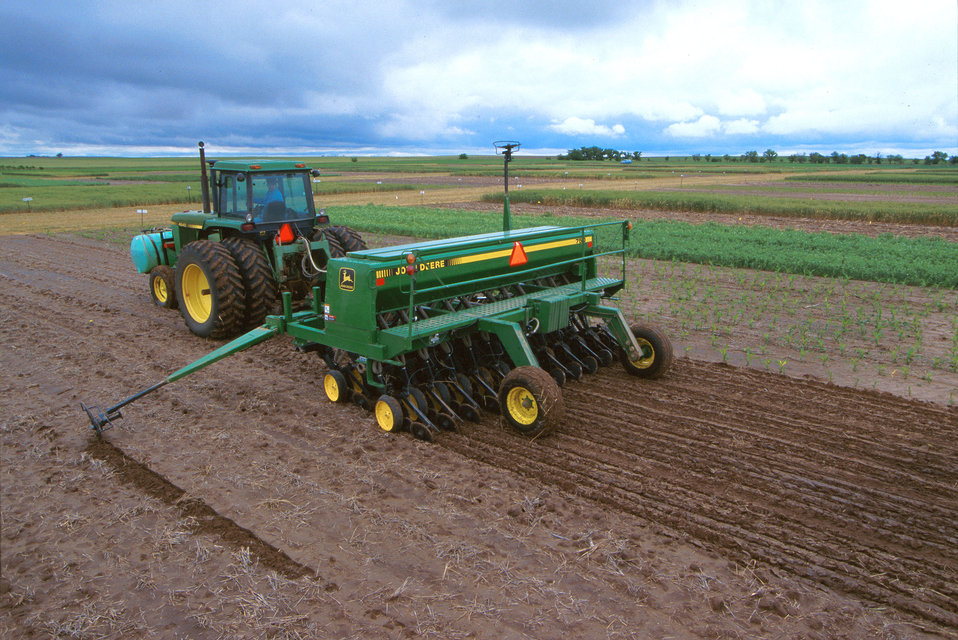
A farmer plants foxtail millet for summer annual forage. The millet has low water needs and helps conserve water for subsequent crops.